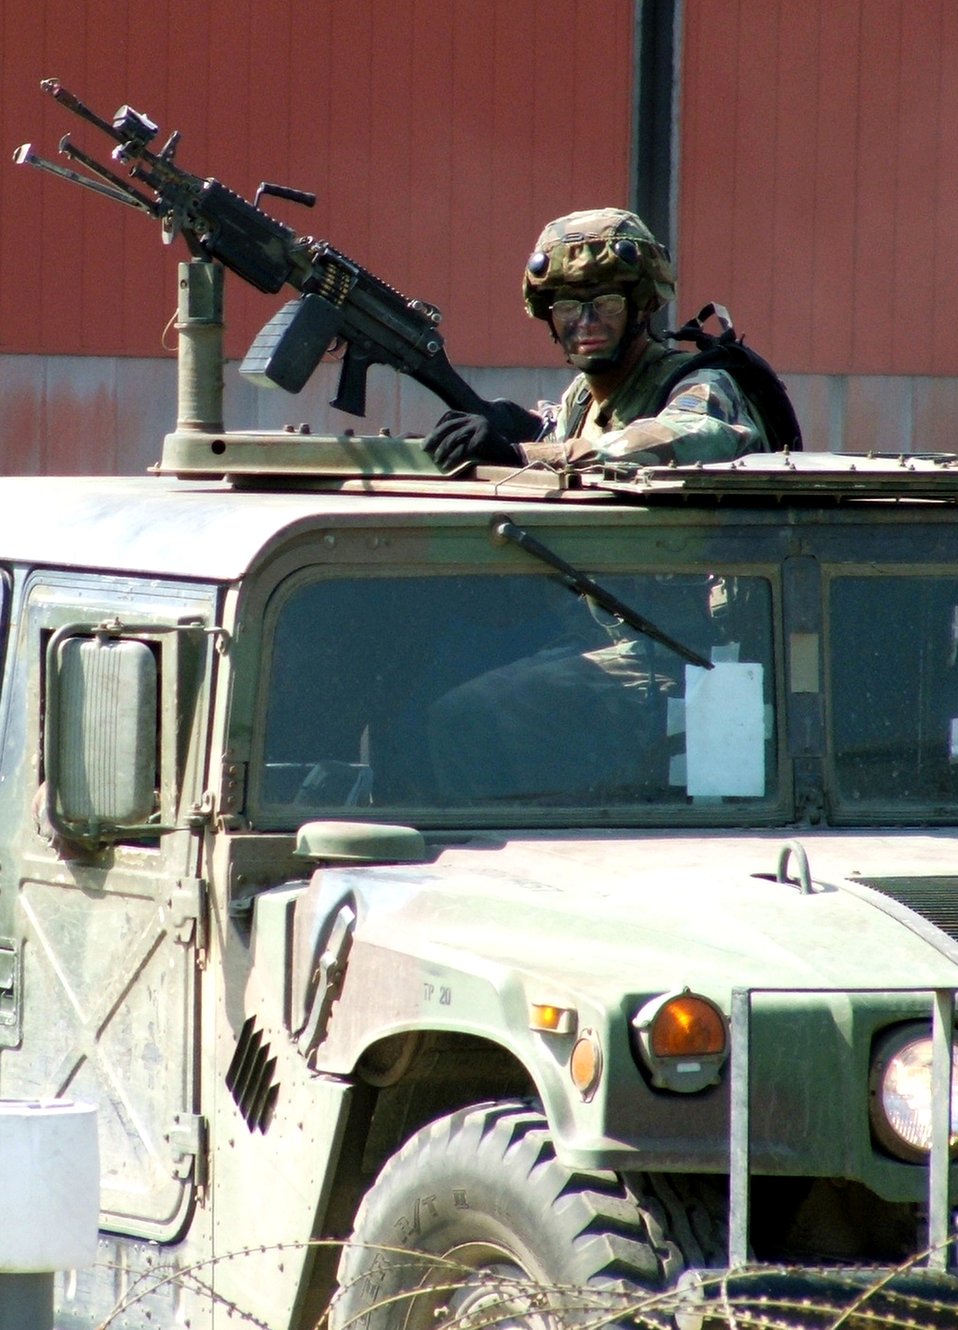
After one year, Phoenix Warrior course soaring high

Students in the Air Force Phoenix Warrior Training Course 07-6 practice convoy operations Aug. 29 at Naval Air Engineering Station Lakehurst, N.J. The course is taught by the U.S. Air Force Expeditionary Center's 421st Combat Training Squadron at Fort Dix, N.J.